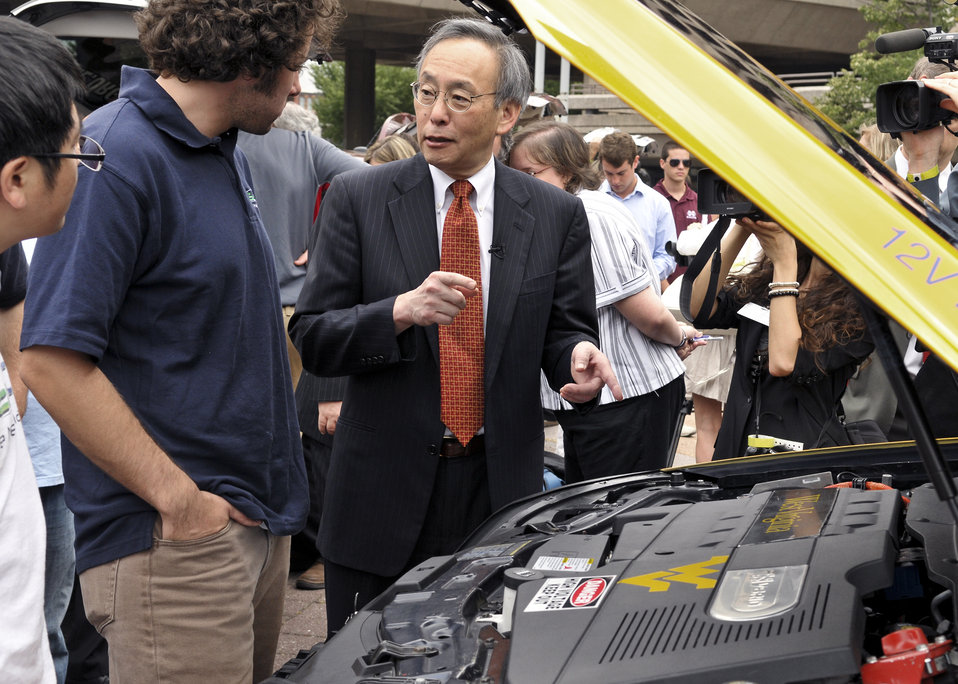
EcoCAR Challenge Finish Line 1 of 8

US Department of Energy Secretary Steven Chu talks shop with members of the West Virginia EcoCAR team.